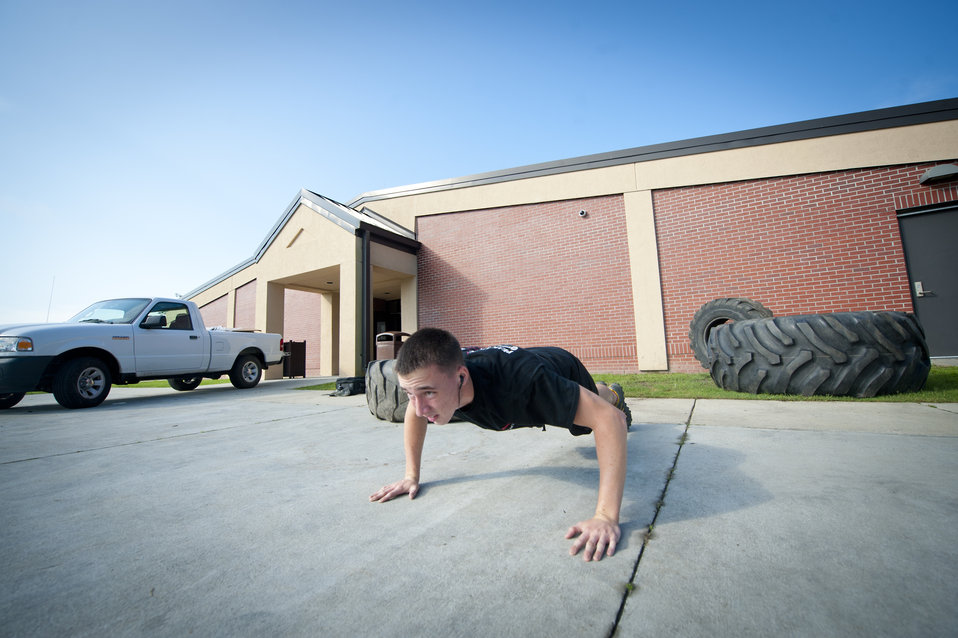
Pushing through

Airman 1st Class Adam Orton does pushups at Moody Air Force Base, Ga., Aug. 9, 2012. Orton works out five to six days a week on cardio and strength training. Orton is a 74th Aircraft Maintenance Unit aerospace propulsion journeyman.